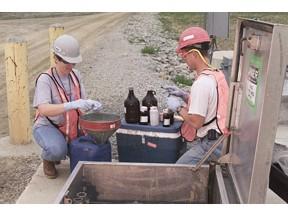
Fernald Environmental Monitoring

At Fernald, TN, the Environmental Monitoring program includes the collection of groundwater, surface water, sediment, and air samples to assess the impact of Fernald’s remediation activities on the surrounding environment. The Environmental Monitoring program involves routine groundwater sampling and analysis to evaluate the performance of the groundwater extraction system for the Great Miami Aquifer.